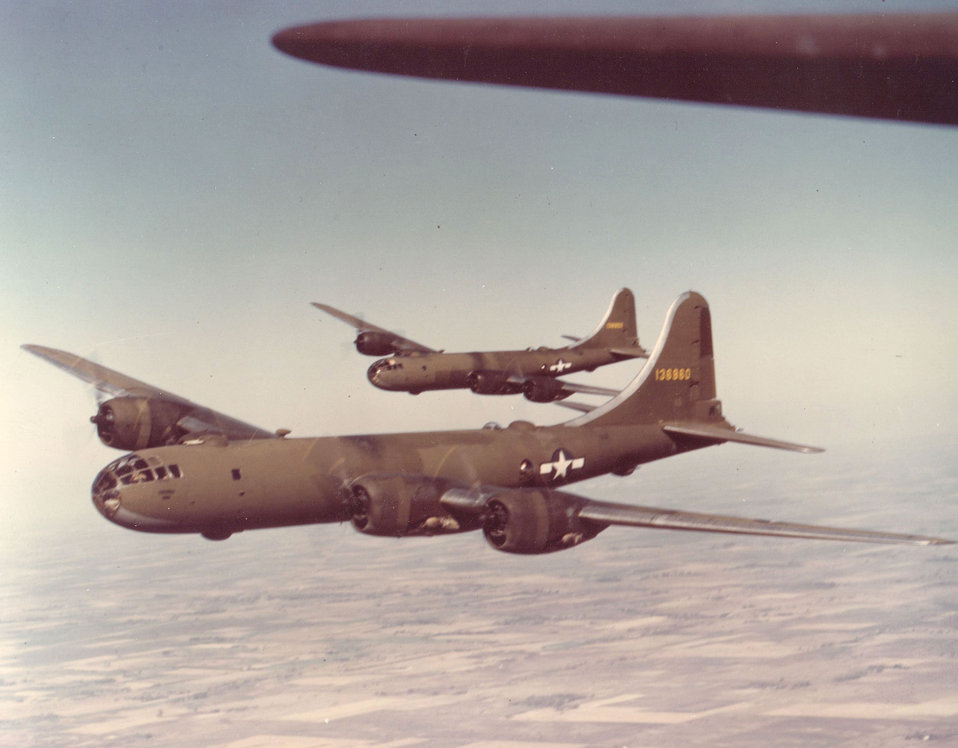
B-29

1940's -- B-29